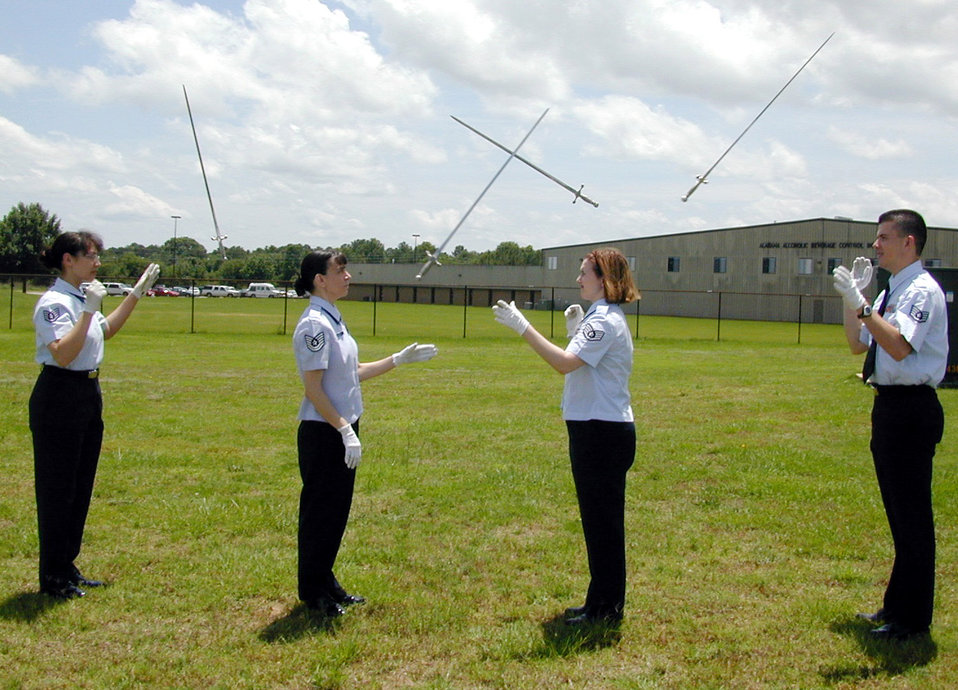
Sabre team

GUNTER ANNEX, Ala. (AFPN) -- (Left to right) Staff Sgt. Jennifer Kelley, Tech. Sgt. Tracey Ulanski, Staff Sgt. Amanda Stoll and Staff Sgt. Jared Sledge perform an overhead toss, where the four members toss their sabers into the air diagonally then catch the sabers one-handed.